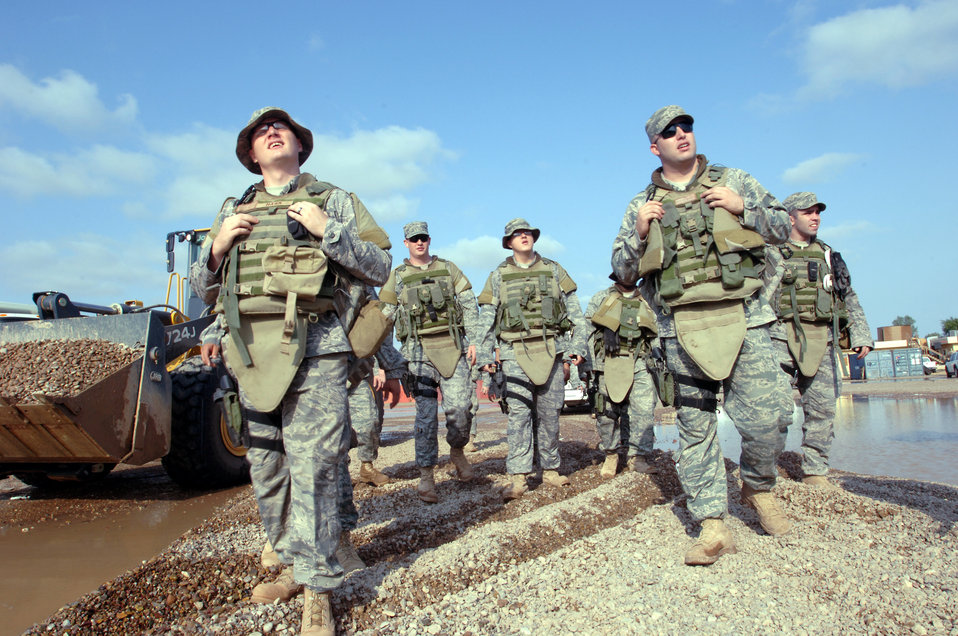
Can't stop the rain

Airmen with the 532nd Security Forces Squadron look at construction equipment as they walk across a newly made path through a flooded area Oct. 25 at Joint Base Balad, Iraq. Because rain is infrequent in Iraq, when it does rain, the hardened ground soaks up little water.